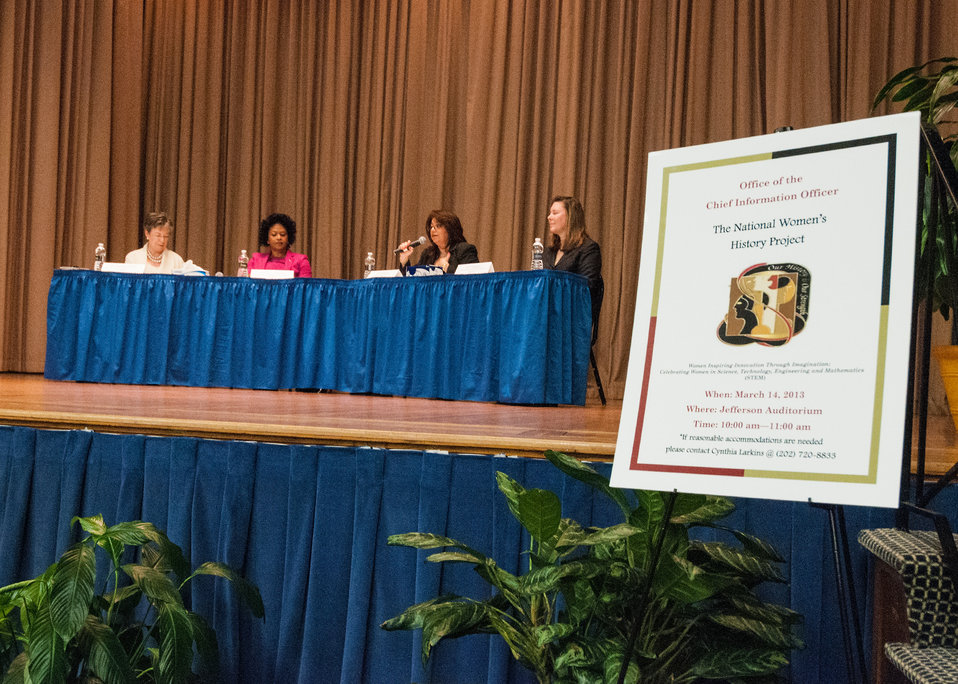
(L to R) Agriculture Under Secretary, Research, Education and Economics (REE) Dr. Katherine Wotecki, U.S. Department of Agriculture (USDA) Associate Chief Information Officer (Technology) Ms. Yvonne Jackson, USDA Rural Development (RD) Rural Utilities Service (Engineering) Assistant Administrator Ms. Nivin Elgohary, and USDA Associate Chief Financial Officer (Mathematics) Ms. Kim Farington chair a panel during the USDA ‘s Office of the Chief Information Officer (OCIO) National Women’s History Month celebration at the USDA Jefferson Auditorium in Washington, D.C. on Thursday, Mar. 14, 2013. The theme of this year’s celebration is, “Recognizing American Women’s Outstanding Contributions to the Field of Science, Technology, Engineering and Mathematics,” commonly referred to as STEM.